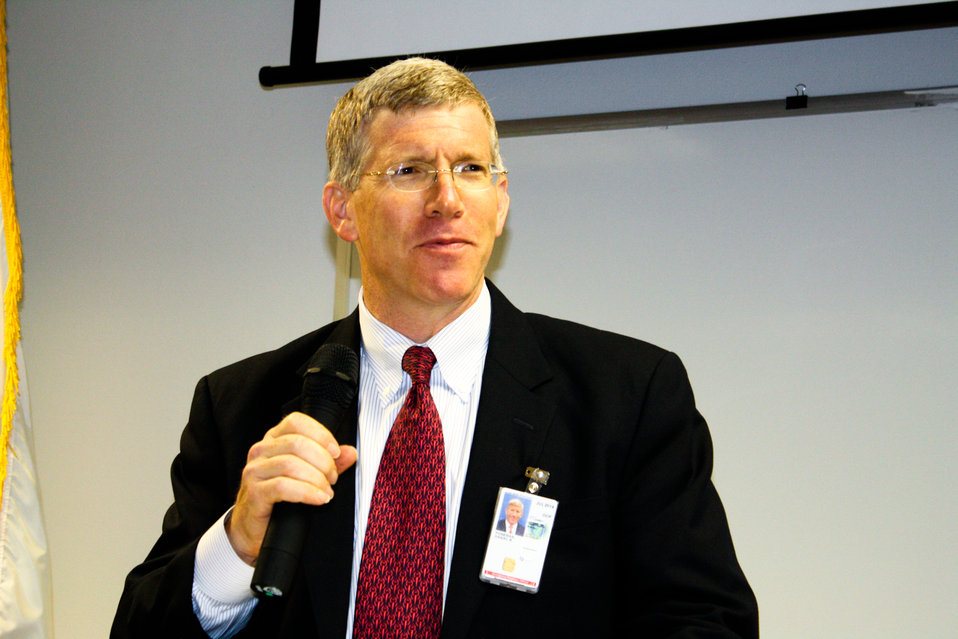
Poneman Vit Plant Visit 06-14-10-2